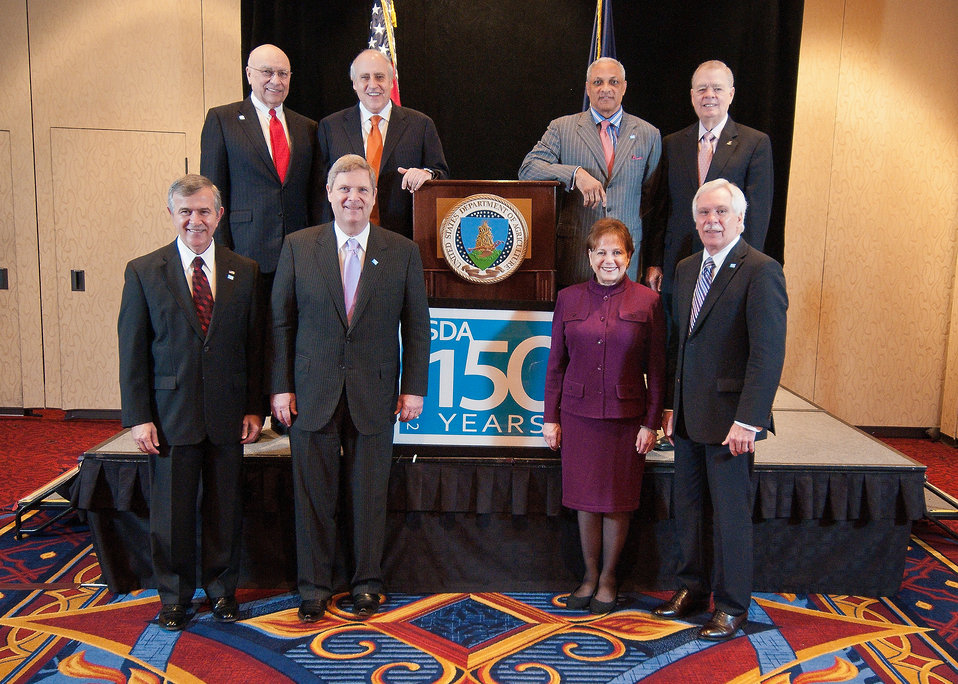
At the 2012 Agricultural Outlook Forum, “Moving Agriculture Forward” in Arlington, VA, held on Thursday, February 23, 2012, 7 former Secretaries of Agriculture sat on the plenary panel “Visions of the Future” hosted by current Agriculture Secretary Tom Vilsack. All the Secretaries posed in front of the U. S. Department of Agriculture’s 150th Anniversary logo. Standing on the podium are (L to R) Clayton Yeutter, Congressman Dan Glickman (KS), Congressman Mike Espy (MS), and John Block. Standing in front of the podium (L to R) Senator Mike Johanns (NE) Agriculture Secretary Tom Vilsack, Ann Veneman, and Governor Ed Schafer (ND).